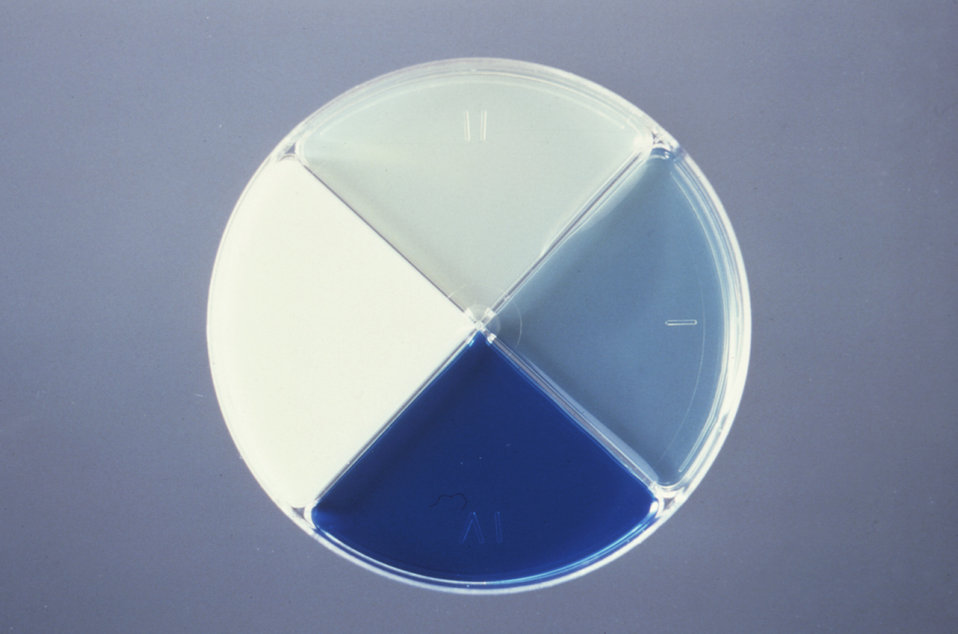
This is a Presumpto II quadrant plate developed by the CDC's Anaerobe Section for the identification of anaerobic organisms.